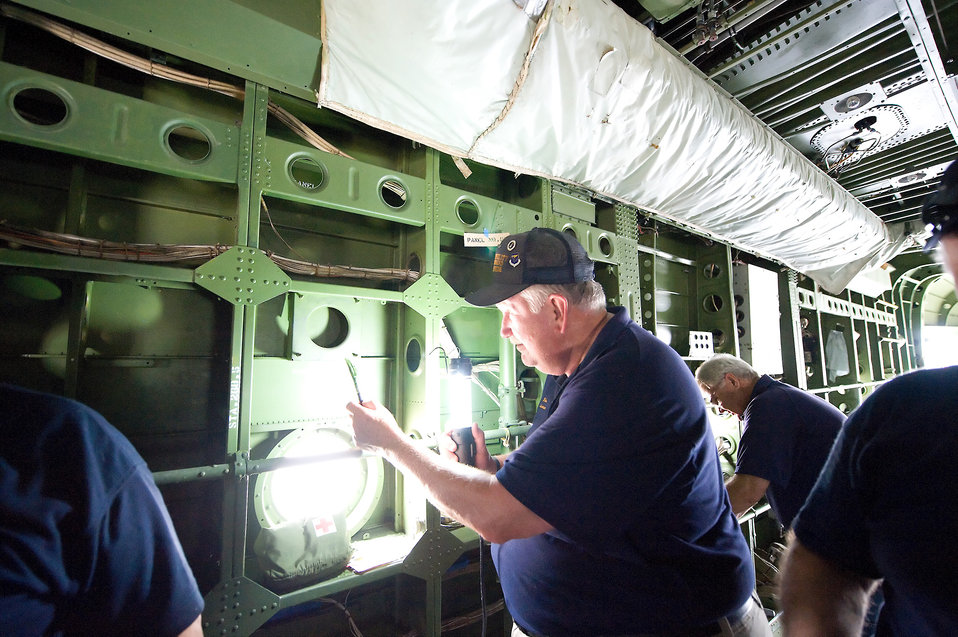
Restoring memories

Mike Wood, a restoration volunteer, paints the interior of a C-119 Flying Boxcar June 23, 2011, at the Air Mobility Command Museum on Dover Air Force Base, Del. Mr. Wood is one of more than 100 volunteers at the AMC Museum.